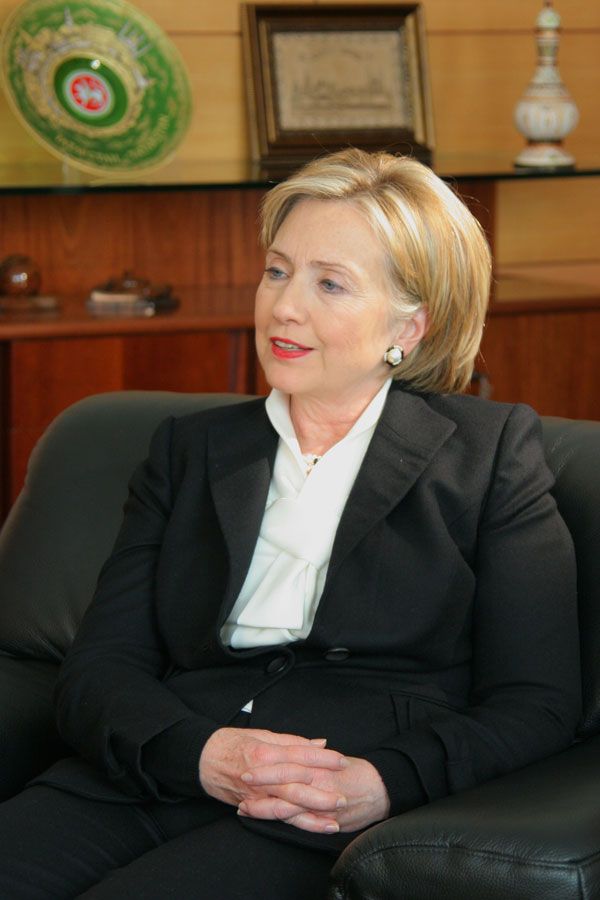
Secretary Clinton Answers Questions

U.S. Secretary of State Hillary Rodham Clinton answers questions for a television news interview in Kazan, Russia, October 14, 2009